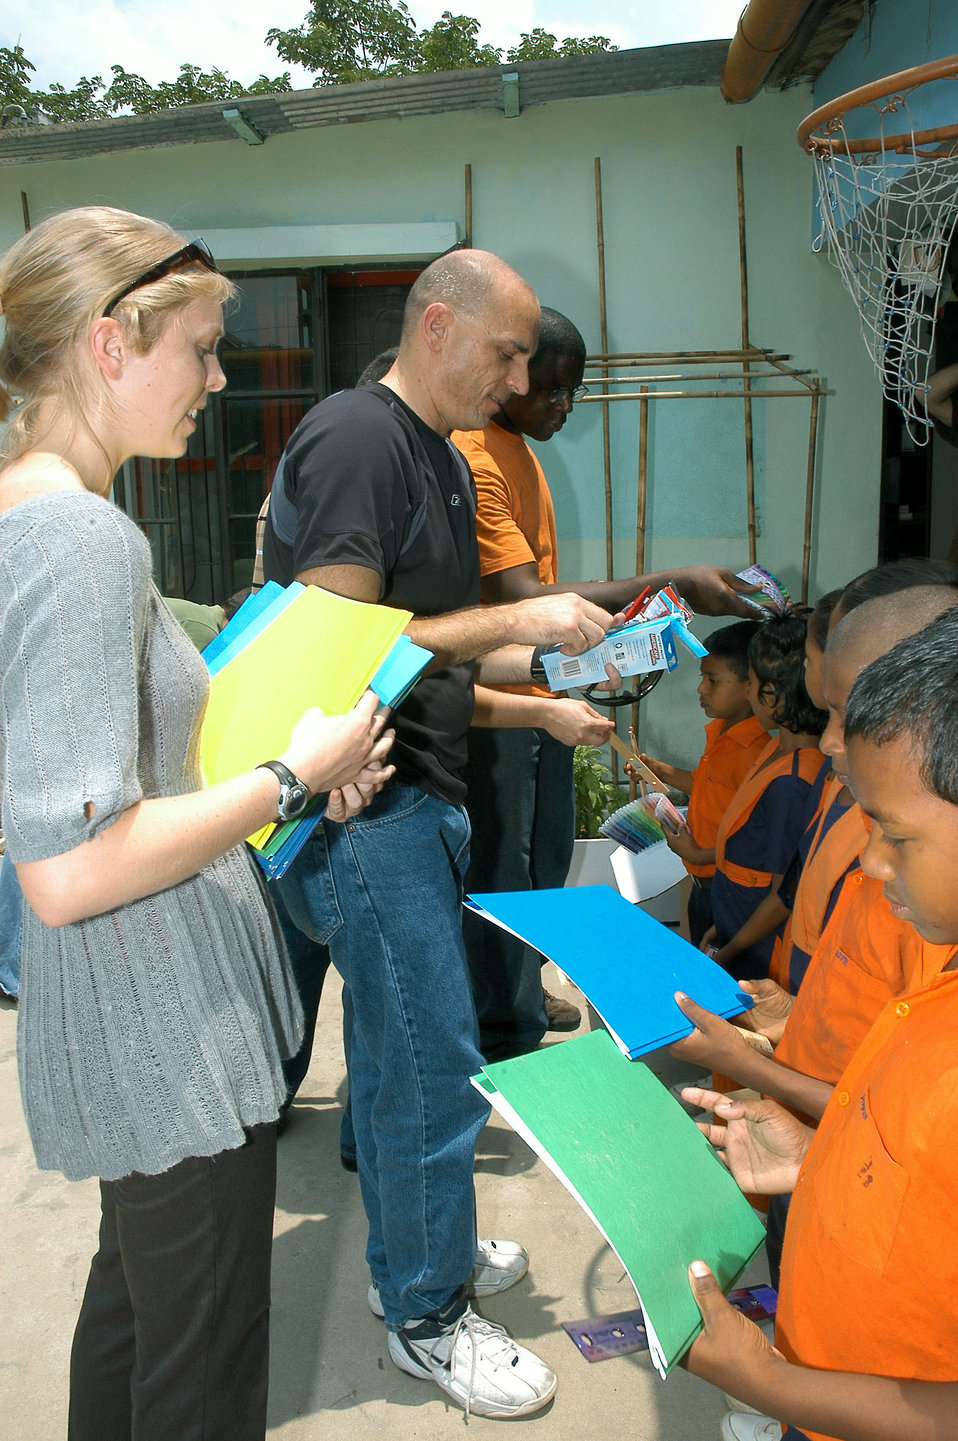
Spreading Good Cheer

Capt. Gretchen Holden, Senior Master Sgt. Jerry Wilkerson and Technical Sgt. Gideon Juko hand out school supplies to students April 27 in a school in Dhaka, Bangladesh. All are members of the 353rd Special Operations Group and are deployed to Bangladesh to train with the Bangladesh Air Force.